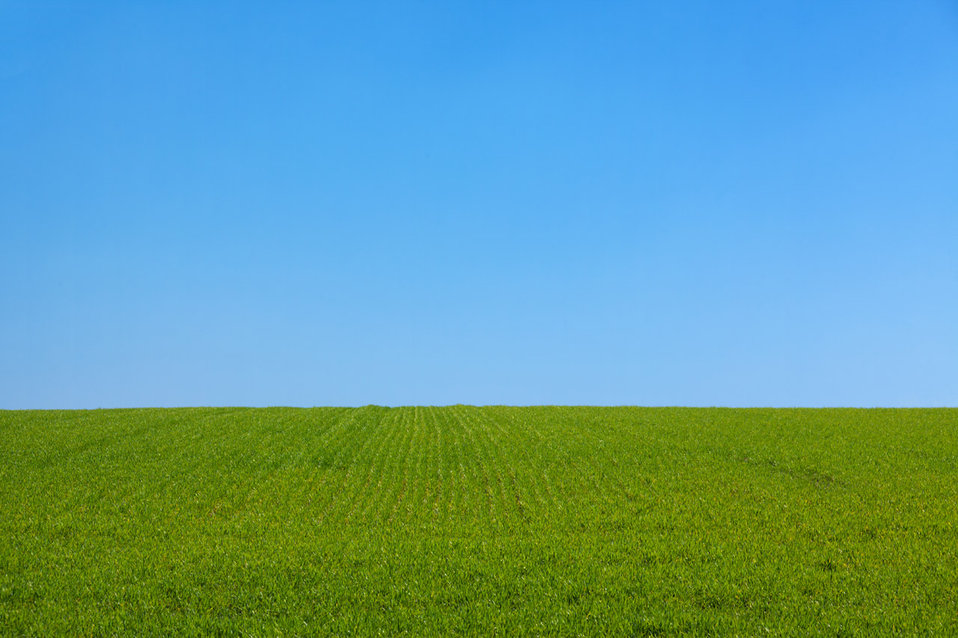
Grass and the sky background

Green grass and blue sky background photo.